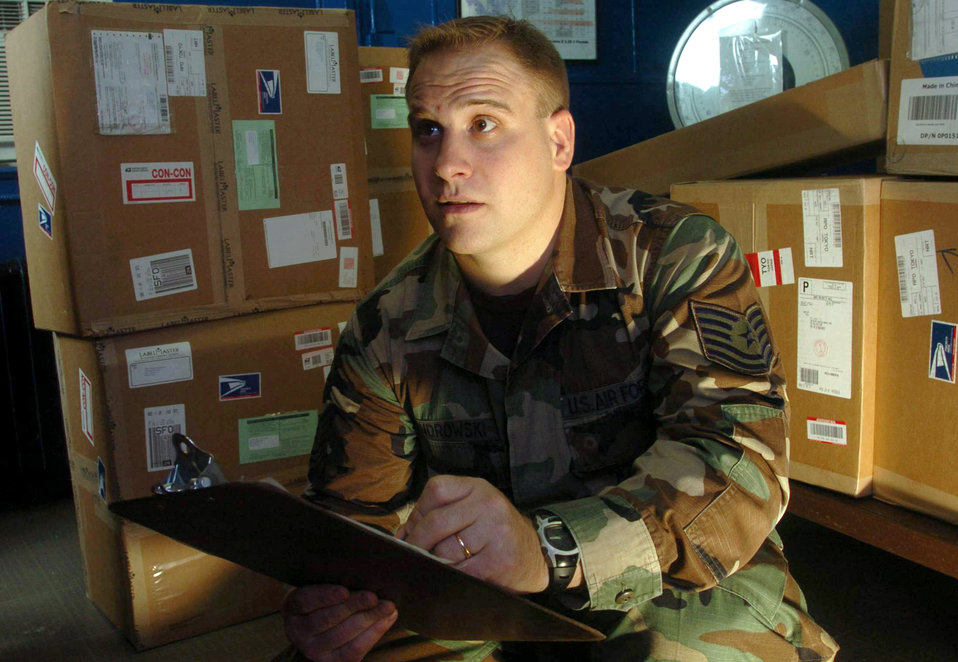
Yokota mail

YOKOTA AIR BASE, Japan -- Tech. Sgt. Richard Cendrowski inspects packages at the mail processing facility here ensuring they have the proper markings before shipment. He is assigned to Detachment 2 of the Air Postal Squadron. The detachment oversees the movement, sorting and distribution of more than 50 million pounds of mail annually.